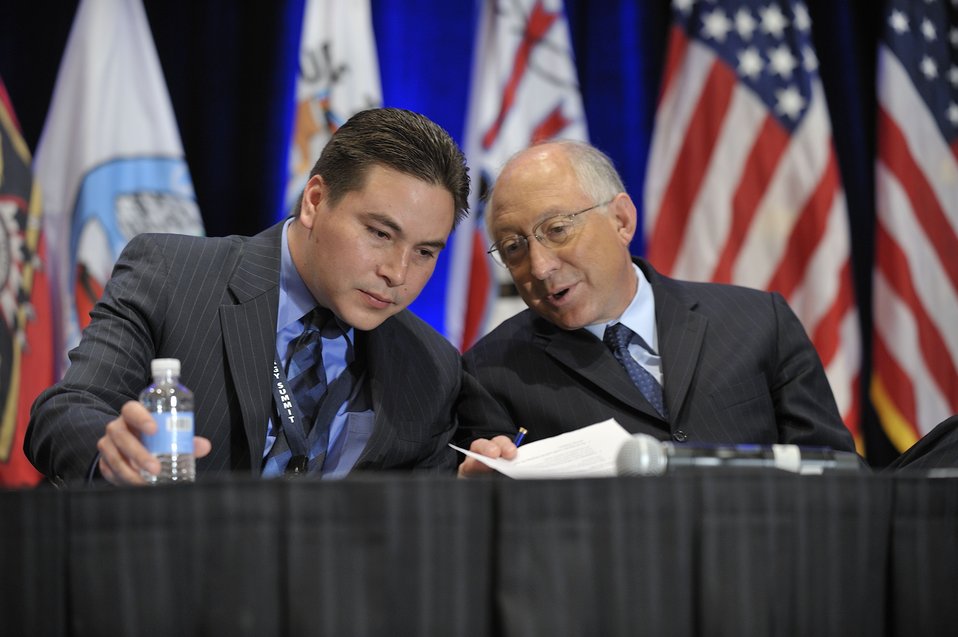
Tribal Energy Summit

Del Laverdure and Secretary Salazar